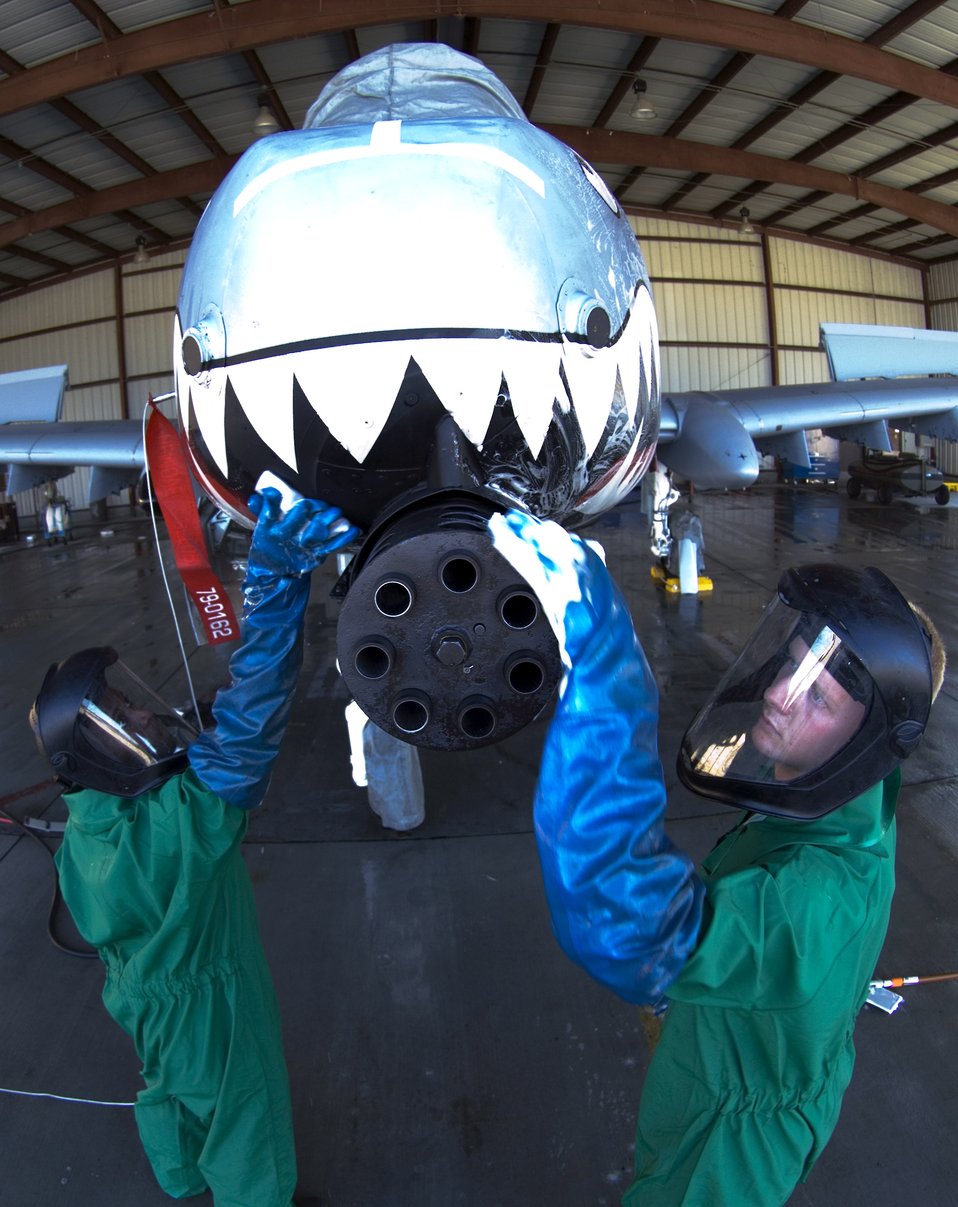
Tooth brush

Senior Airman Michael Holmes and Airman 1st Class Joshua Norris wash an A-10 Thunderbolt II Nov. 19 at the corrosion control wash rack at Moody Air Force Base, Ga. The A-10 receives a thorough wash-down and lubrication every three months to prevent corrosion and to inspect for surface damage. The Airmen are assigned to the 23rd Aircraft Maintenance Squadron.